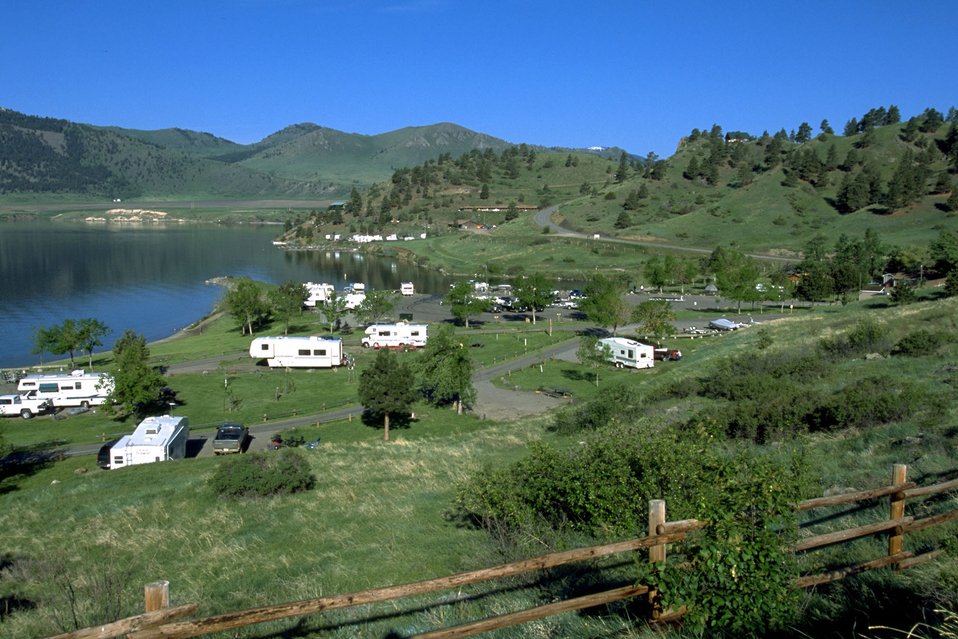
View from hillside showing road leading to Holter Lake Recreation Site